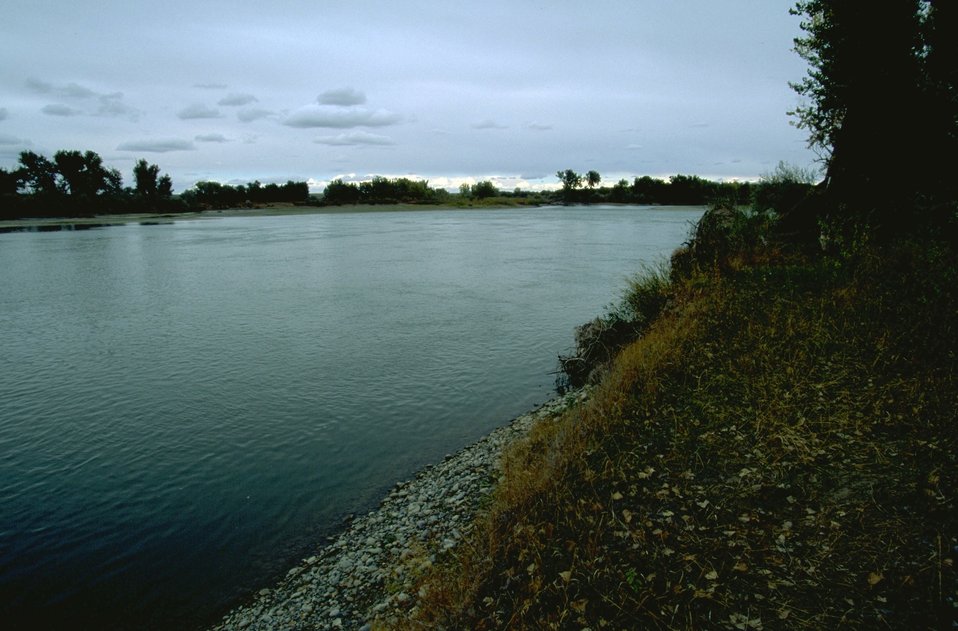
The Yellowstone River in the evening light